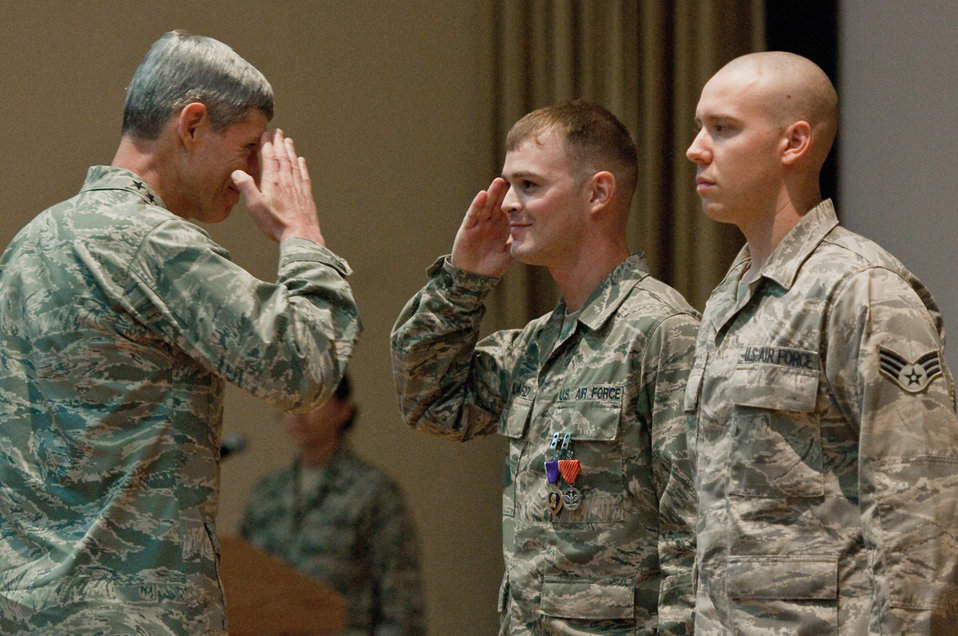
Air Force Chief of Staff Gen. Norton Schwartz presents a Purple Heart and an Air Force Combat Action Medal to Senior Airman Brian Willard during a commander's call June 22, 2010, at the 386th Air Expeditionary Wing in Southwest Asia. Airman Willard, a vehicle operator assigned to the 386th Expeditionary Logistics Readiness Squadron here, was injured May 27, 2010, when his supply convoy was hit by an improvised explosive device.